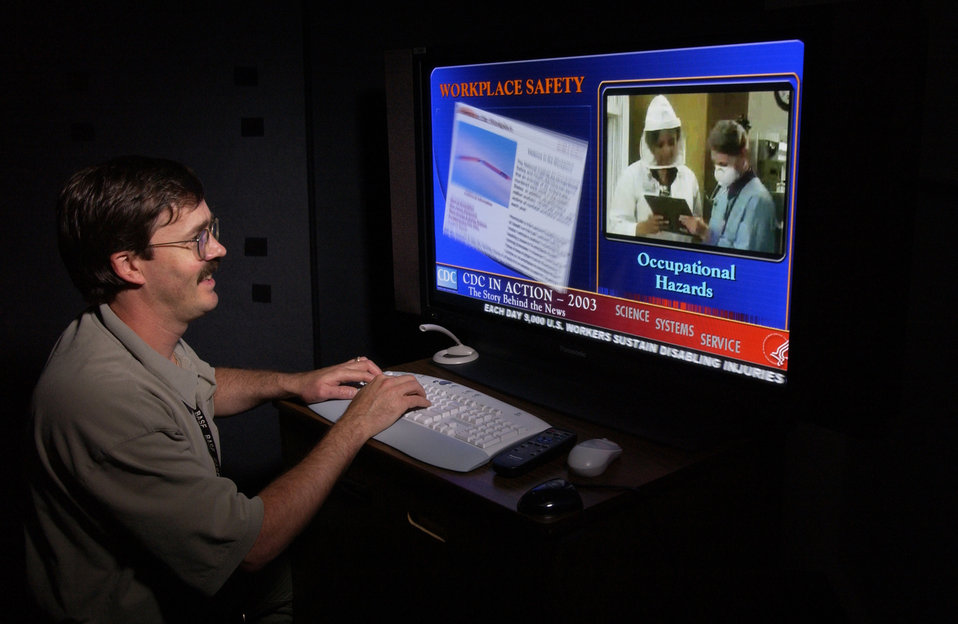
This is PHPPO/DPDE designer Nick Degner creating graphics for the CDC's APHA November, 2003 conference exhibit.